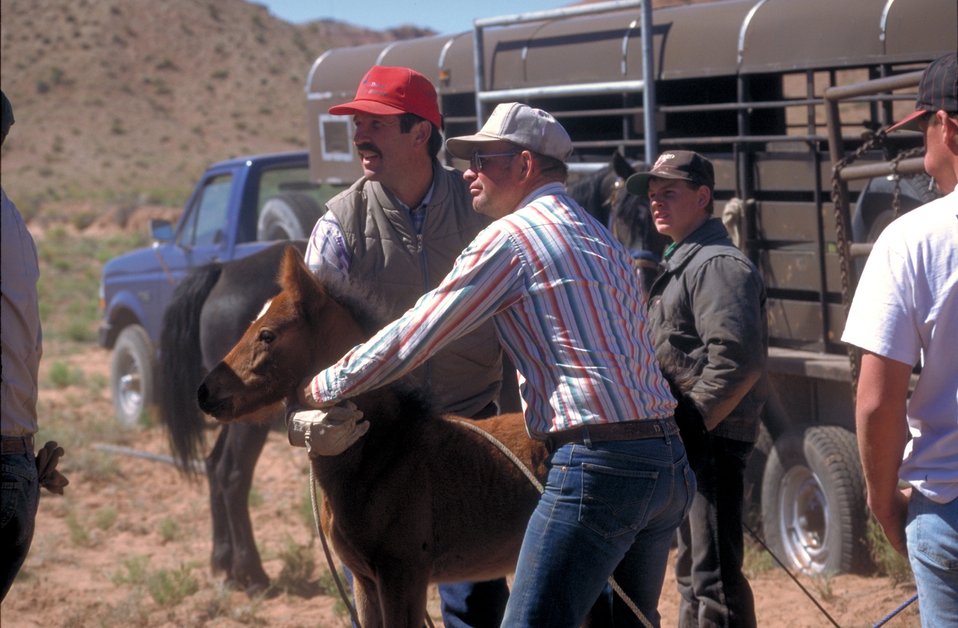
Wild Horse gather, San Rafael Swell.